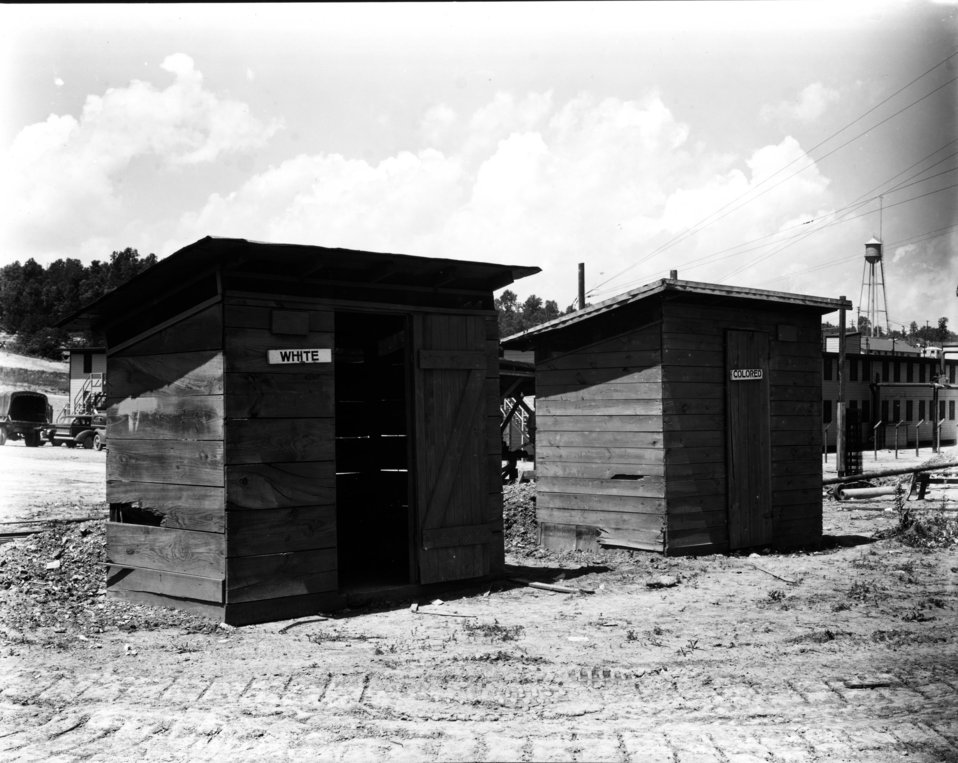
X-10 at Oak Ridge